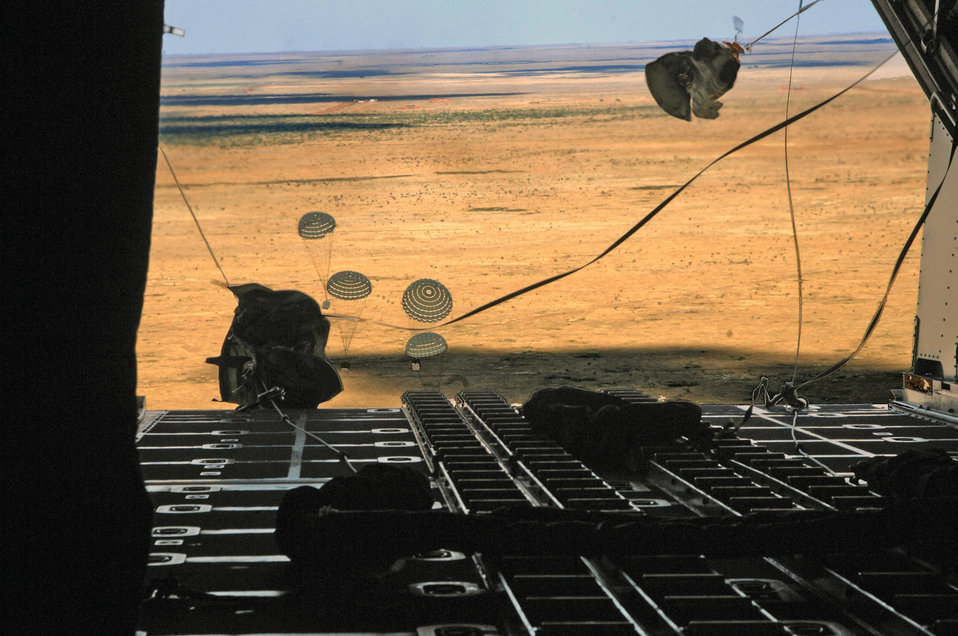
Cannon Airmen train for special operations forces resupply

CANNON AIR FORCE BASE N.M.-- Given the green light, loadmasters from the 73rd Special Operations Squadron drop the load over Melrose Air Force Range Sept. 24 aboard the MC-130W Combat Spear aircraft. Flying low and fast enables them to get out of the area quickly and the equipment to ground personnel just as fast.